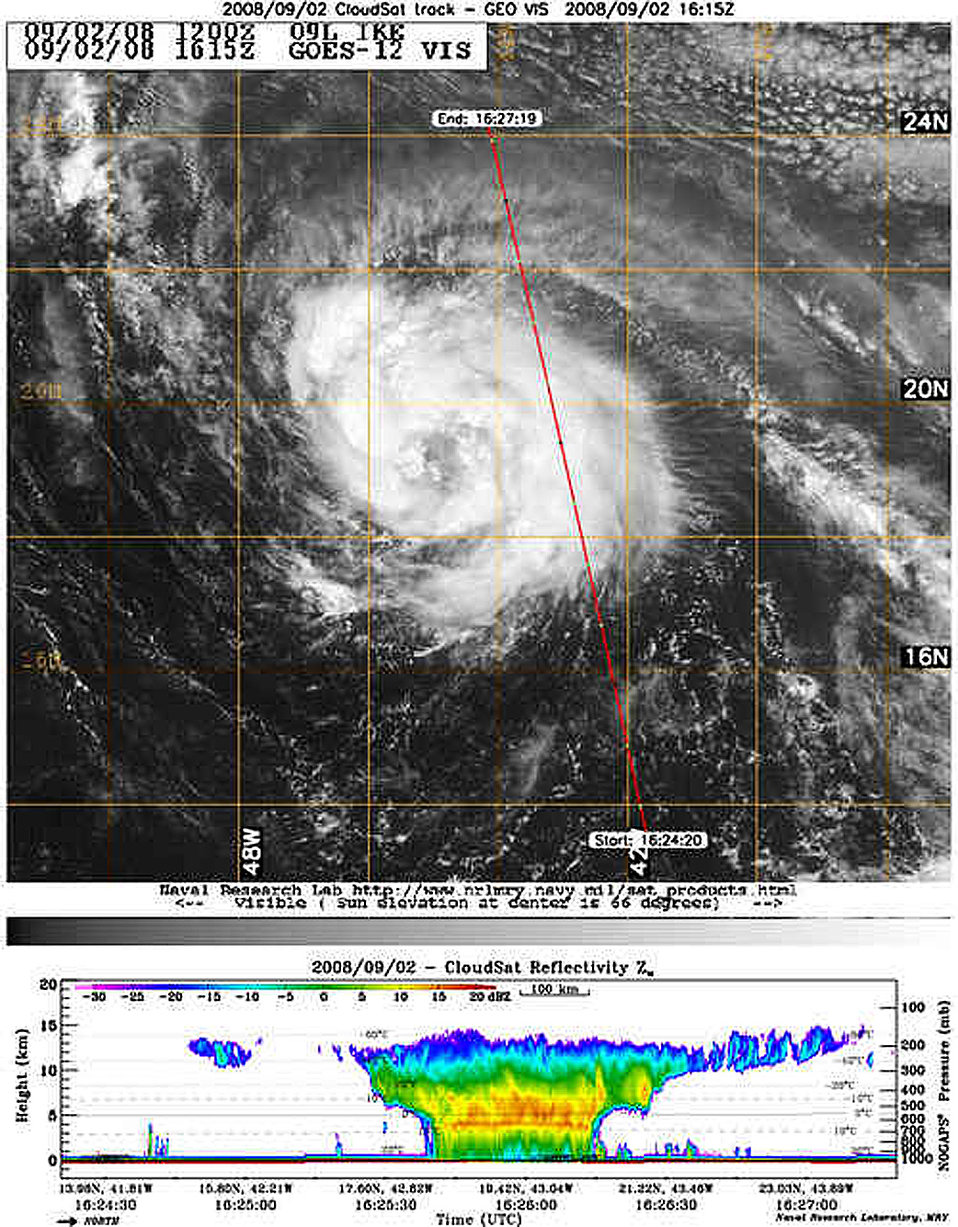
CloudSat Looks at Ike Sliced in Half